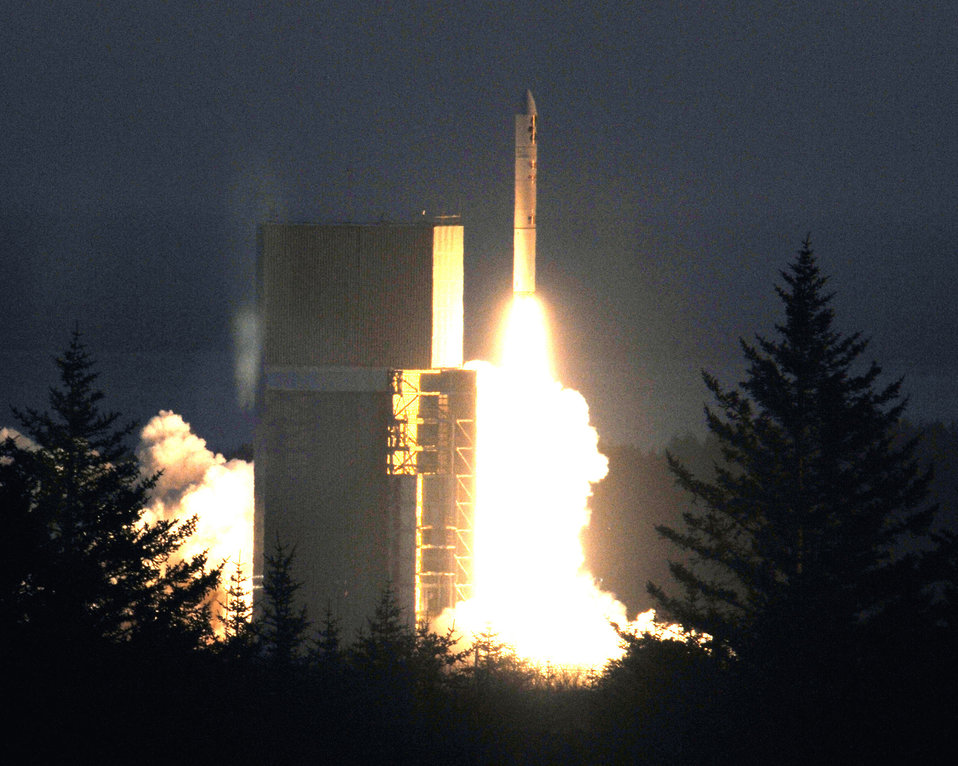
Up, up and away!

A Minotaur IV launch vehicle lifted off recently from the launch complex in Kodiak, Alaska. For the first time, the STP-S26 mission vehicle used a Hydrazine Auxiliary Propulsion System which gave it a dual-orbit capability. The mission deployed six satellites.